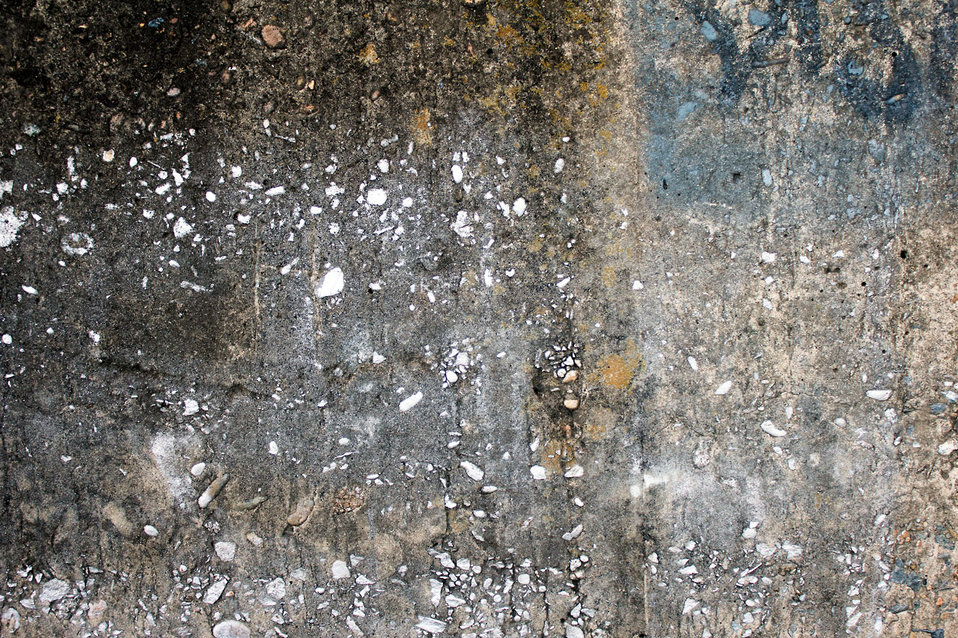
Grungy concrete

Aged concrete with visible aggregate and graffiti.